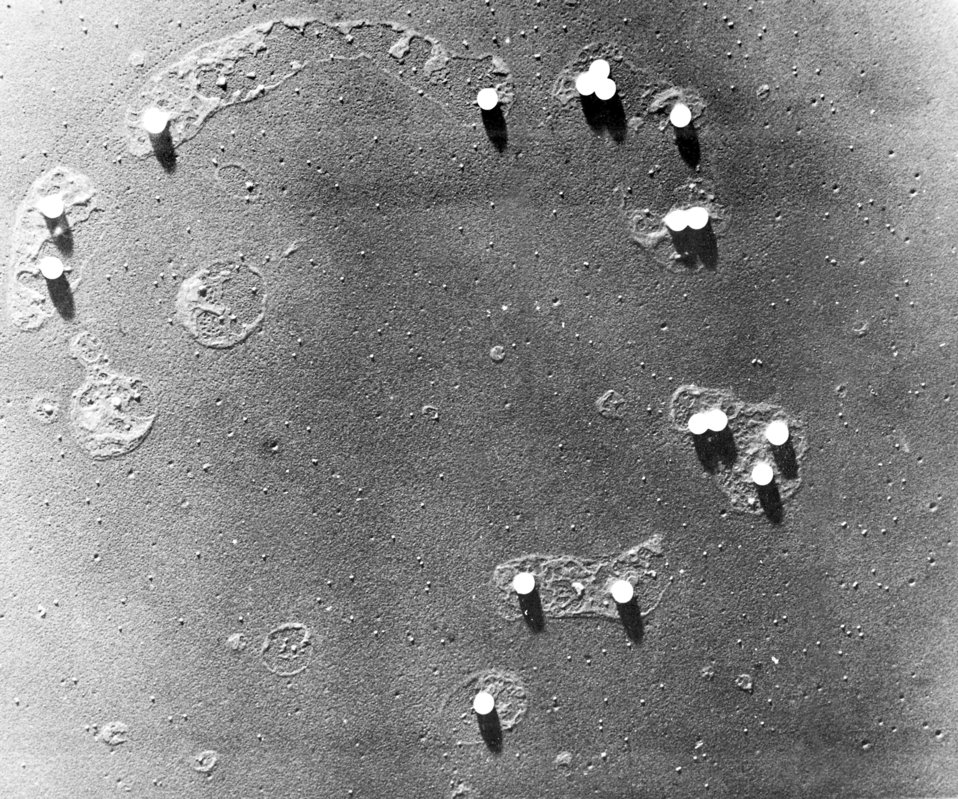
Scanning electron photomicrograph of polio virions.